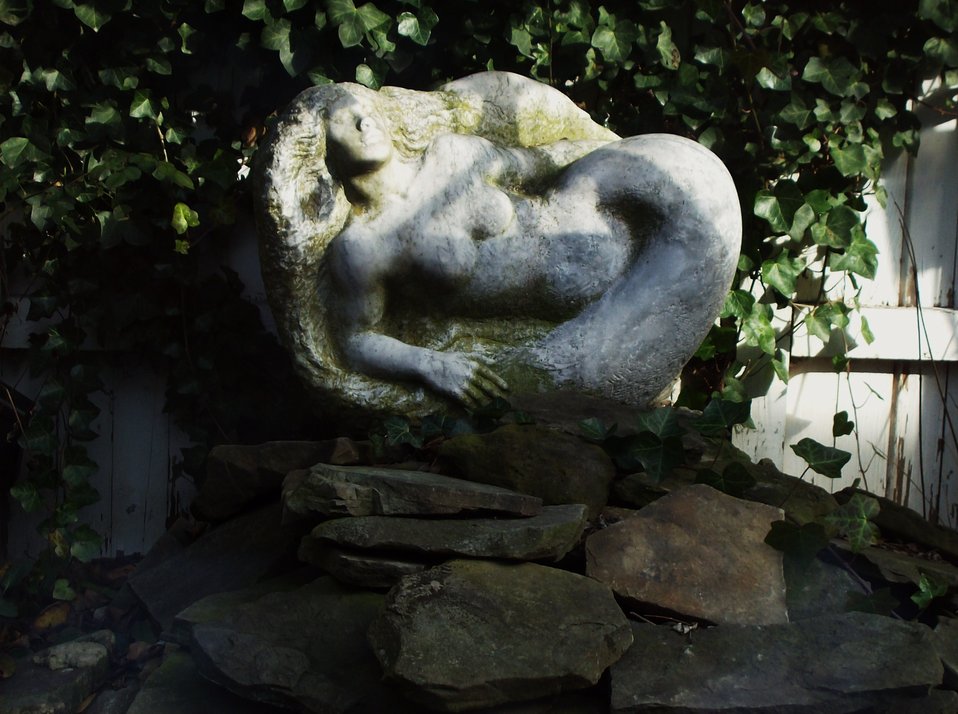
Mermaid sculpture at Mad Batter restaurant on Cape May.